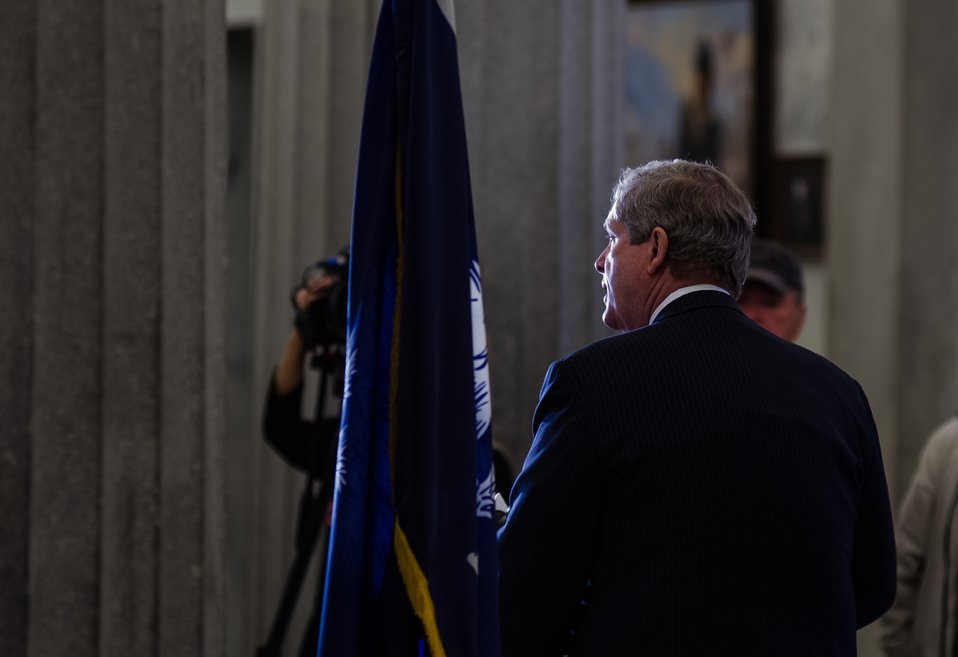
Agriculture Secretary Tom Vilsack speaking at a press conference in the South Caroline State Capitol in Columbia, SC after the kick off of the Strike Force Initiative For Rural Growth and Opportunity at Voorhees College in Denmark, SC, on Tuesday, Mar. 26, 2013.